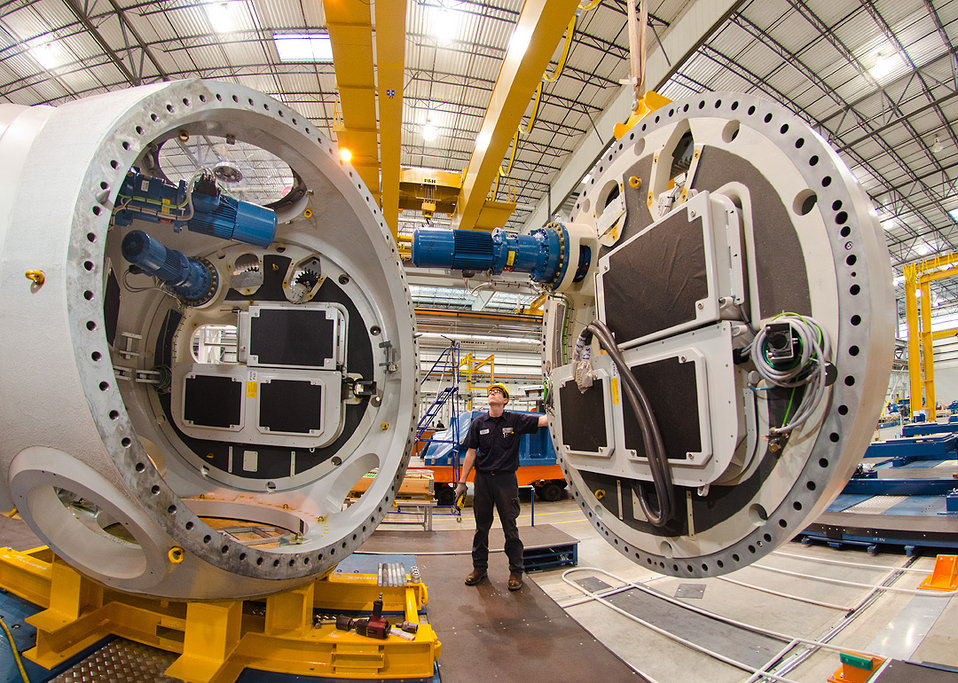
Fantastic

In Jonesboro, Arkansas, a Nordex USA employee stands between utility-scale components that will eventually make up a completed wind turbine. Under the Recovery Act, Nordex USA received a tax credit to assist in the creation of the Jonesboro manufacturing facility, which opened in October 2010.